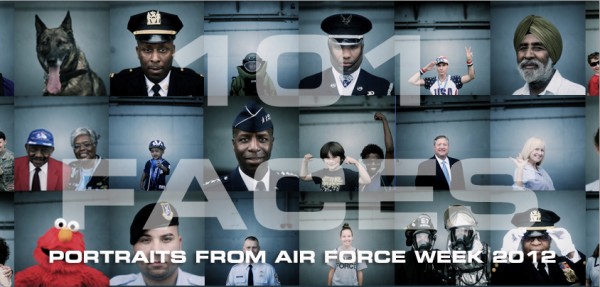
Air Force Week in New York City

101 Faces of Air Force Week in New York City.